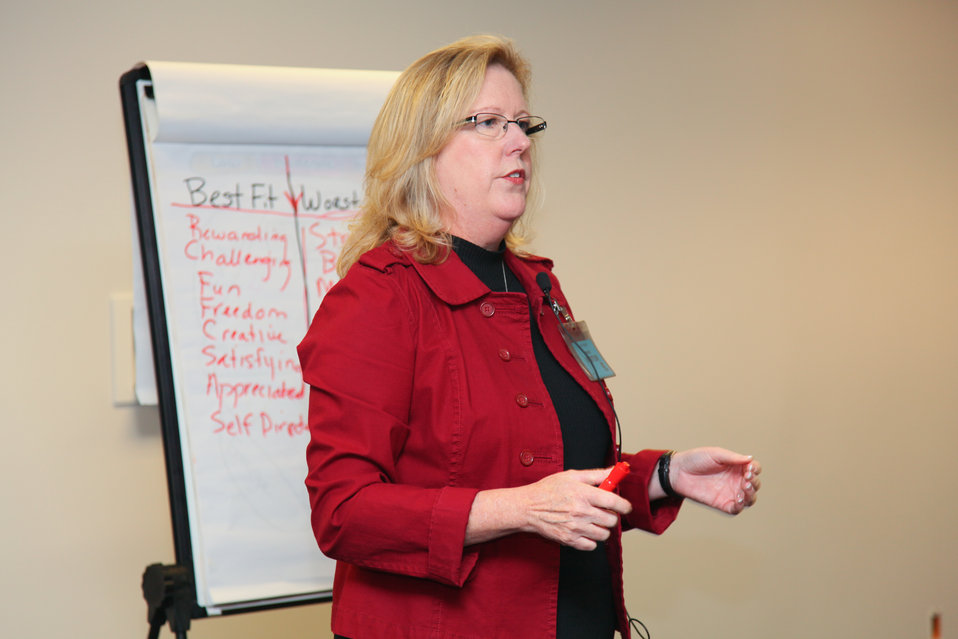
SACRAMENTO, Calif. (Dec. 14, 2010) - Helen Scully, a nationally certified career counselor, speaks to attendees of a career workshop for U.S. Army Corps of Engineers Sacramento District employees at the district’s headquarters building here Dec. 14. The workshop, titled 'Mapping Your Career,' was organized and sponsored by the district’s Equal Employment Opportunity office.

Scully presented a variety of information and strategies, including the psychological stages of development in careers and successful networking strategies. As part of the workshop, attendees took a short self assessment and completed a career action plan for future use.